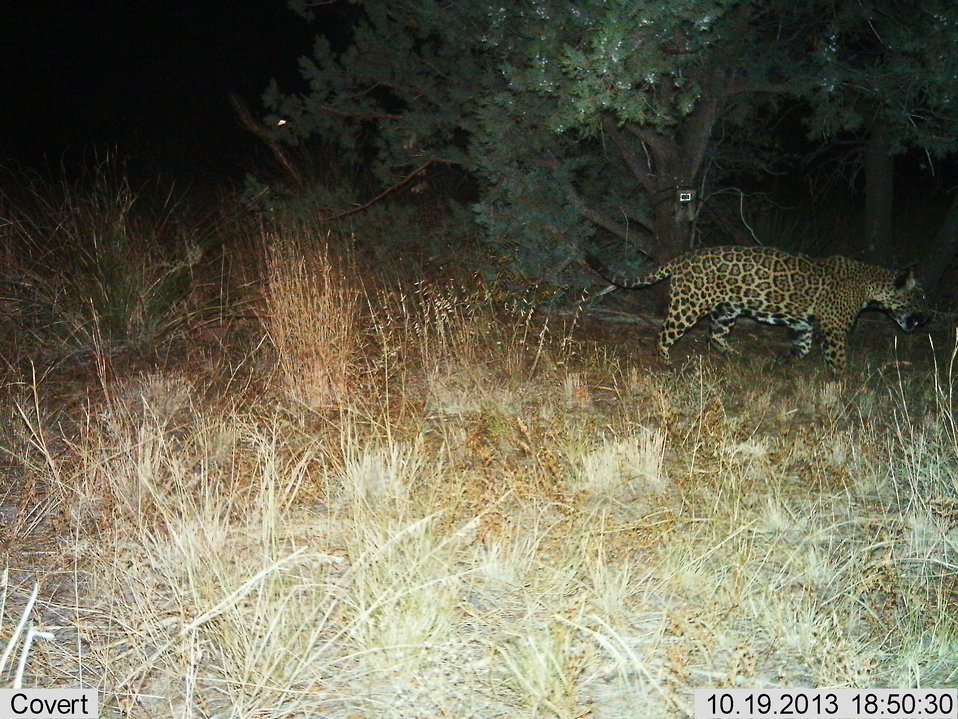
Male jaguar photographed by automatic wildlife cameras in the Santa Rita Mountains on October 19, 2013, as part of a U.S. Fish and Wildlife Service/Department of Homeland Security-funded jaguar survey conducted by University of Arizona. This is the third of three photos from October 19. The jaguar has been photographed previously at this location.